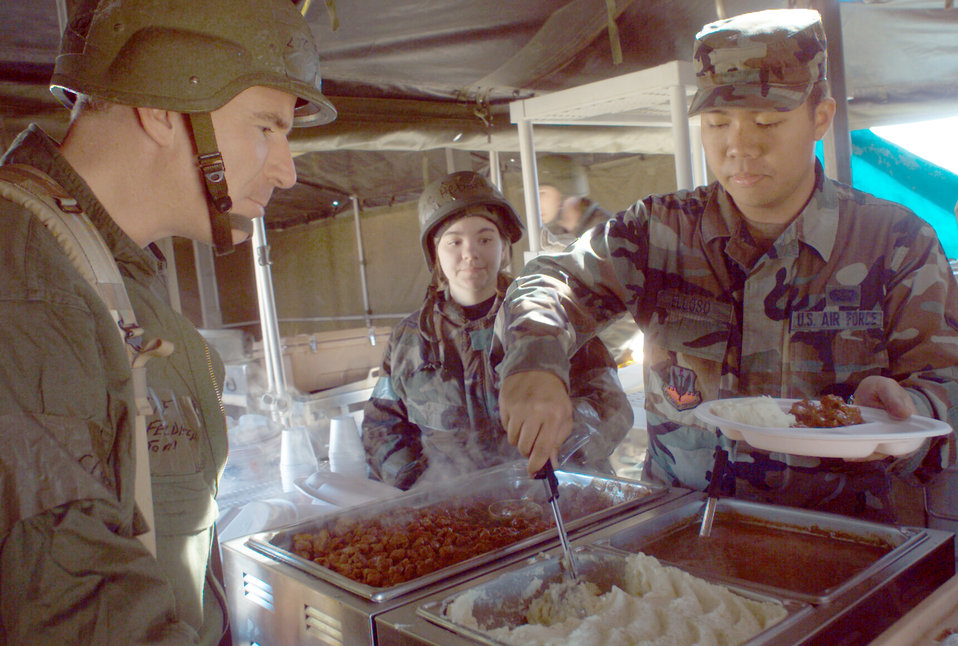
We're being bushwhacked!

DAVIS-MONTHAN AIR FORCE BASE, Ariz. -- Lt. Col. Tom Feldhausen (left) comes in from the cold to eat a hot meal at the combat dining facility during Exercise Bushwhacker 04-03 on Jan. 27. Bushwhacker exercises are held here quarterly to test the 355th Wing's readiness. Preparing his plate are Airman Harron Elloso (right) and Airman 1st Class Jillian Hebert of the 355th Services Squadron. The colonel is commander of the 355th Operational Support Squadron.